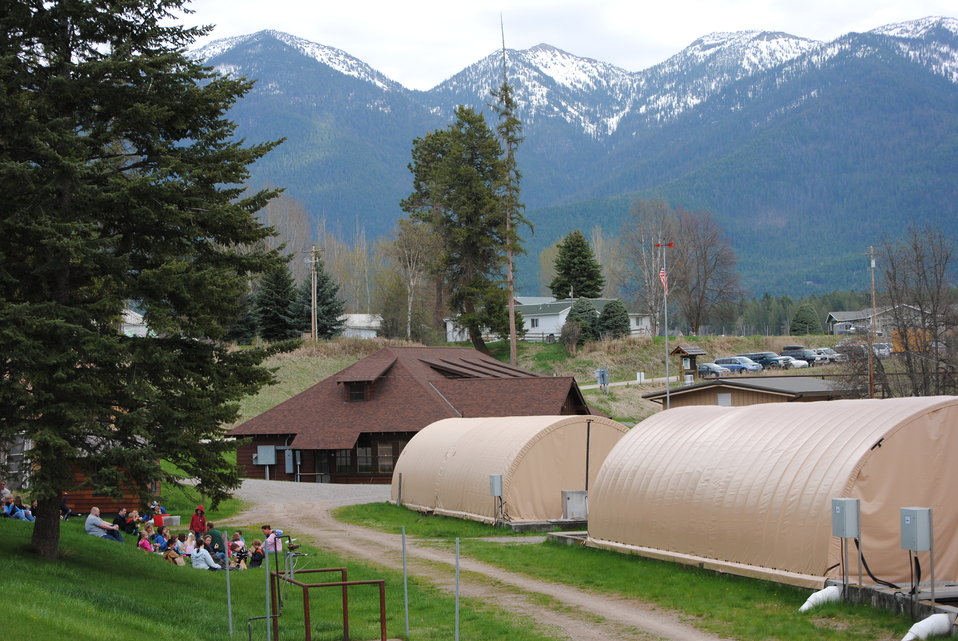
Creston National Fish Hatchery Outdoor Education

Creston National Fish Hatchery provides many educational opportunities for area schools and families.